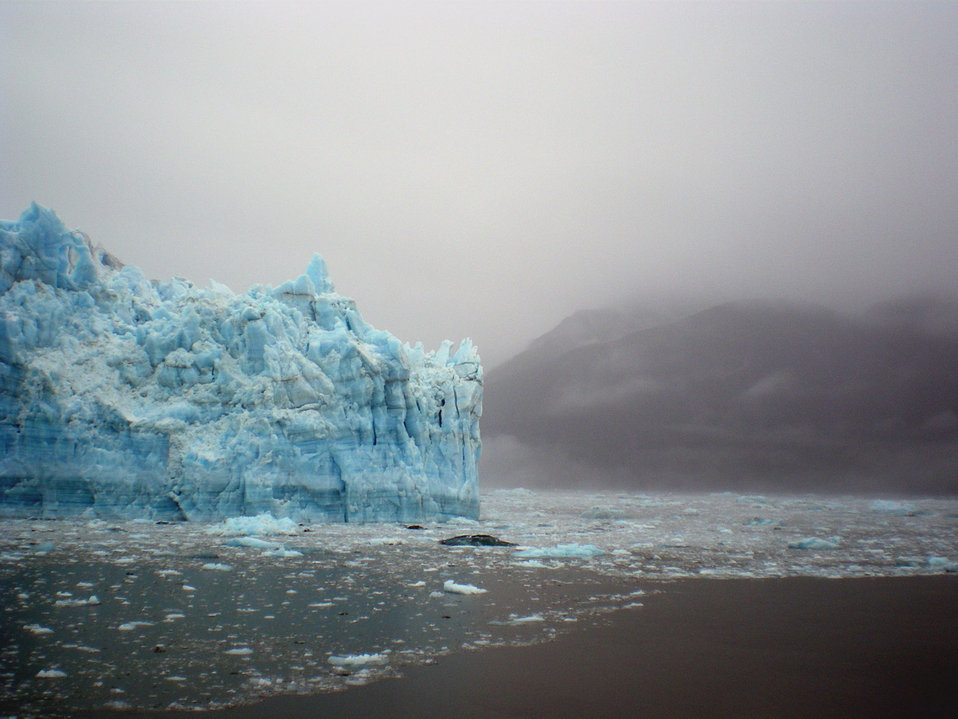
Icy straits glacier

Icy straits in alaska, 300' from the glacier.